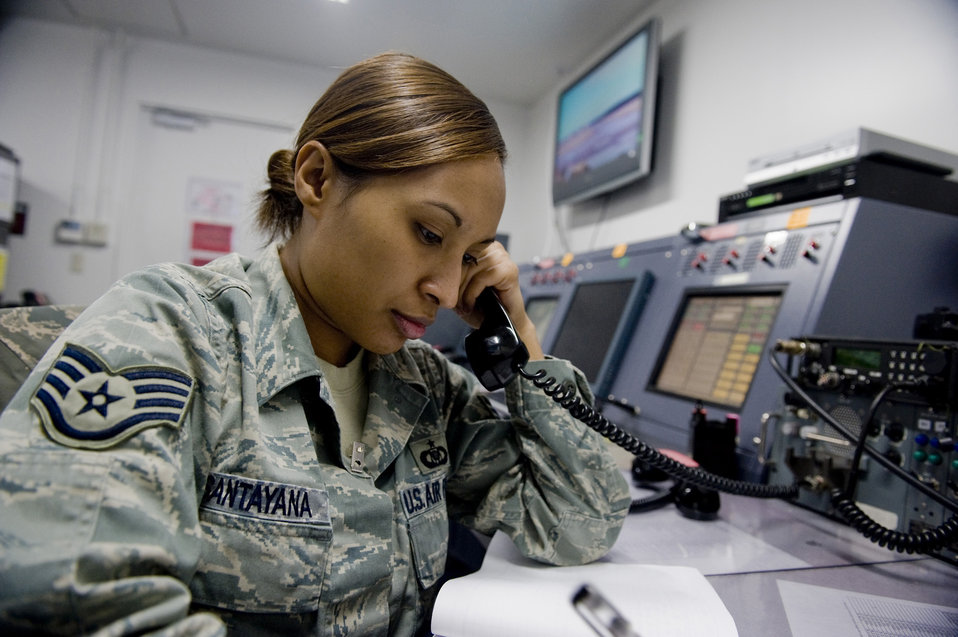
Yokota Airmen central to supporting Operation Tomodachi

Staff Sgt. Sharron Santayana collects information about incoming aircraft in support of Operation Tomodachi March 28, 2011, at Yokota Air Base, Japan. Santayana is assigned to the 374th Airlift Wing command and control unit.